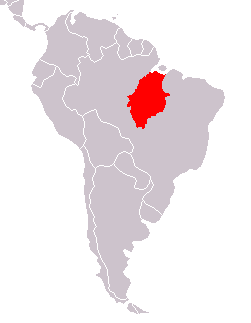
Distribution of C. moloch